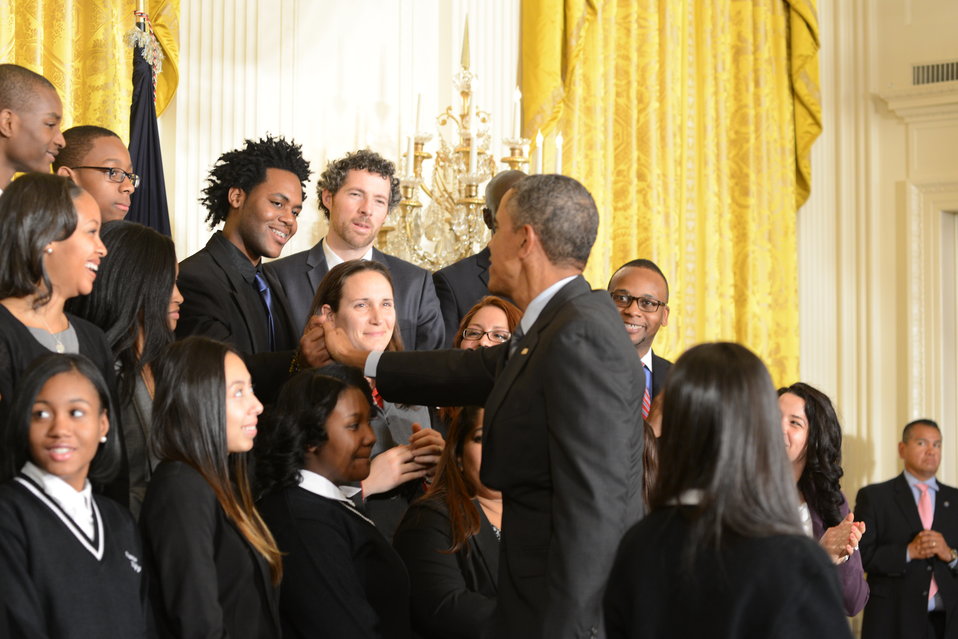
President Barack Obama shakes hands with students from
Harlem Children’s Academy at the conclusion of his 'Promise Zones' announcement in the East Room of the White House on Thursday, Jan. 9, 2013. The President announced the first five “Promise Zones,” located in San Antonio, TX, Philadelphia, PA, Los Angeles, CA, Southeastern Kentucky, and the Choctaw Nation of Oklahoma.